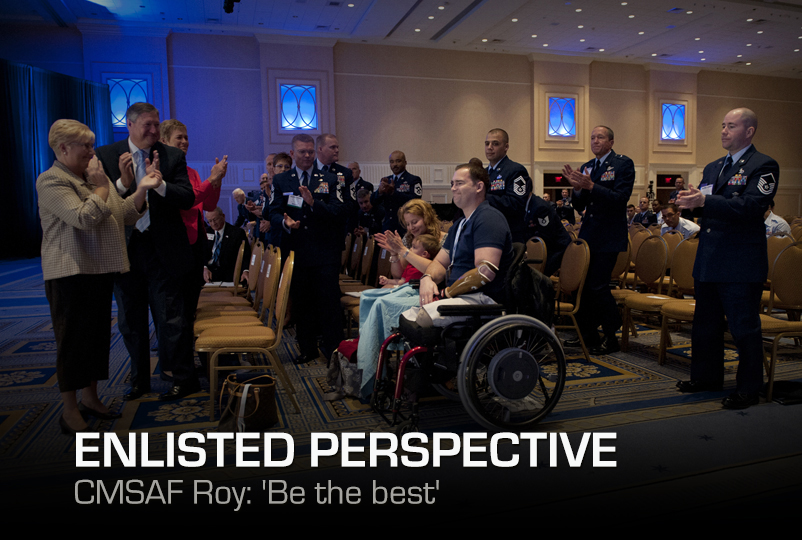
Chief Master Sgt. of the Air Force

Tech. Sgt. Joe Deslauriers, center, his son, Cameron, and wife, Lisa, are applauded by the crowd during the enlisted call of Air Force Association's Air and Space Conference and Technology Exposition in Washington, Sept. 19, 2012. Deslauriers, who is an explosives ordnance technician assigned to the 1st Special Operations Civil Engineer Squadron, Hurlburt, Fla., lost both legs in Afghanistan last year. To the left is Paula Roy; wife of CMSAF Roy; Secretary of the Air Force Michael B. Donley and his wife, Gail.